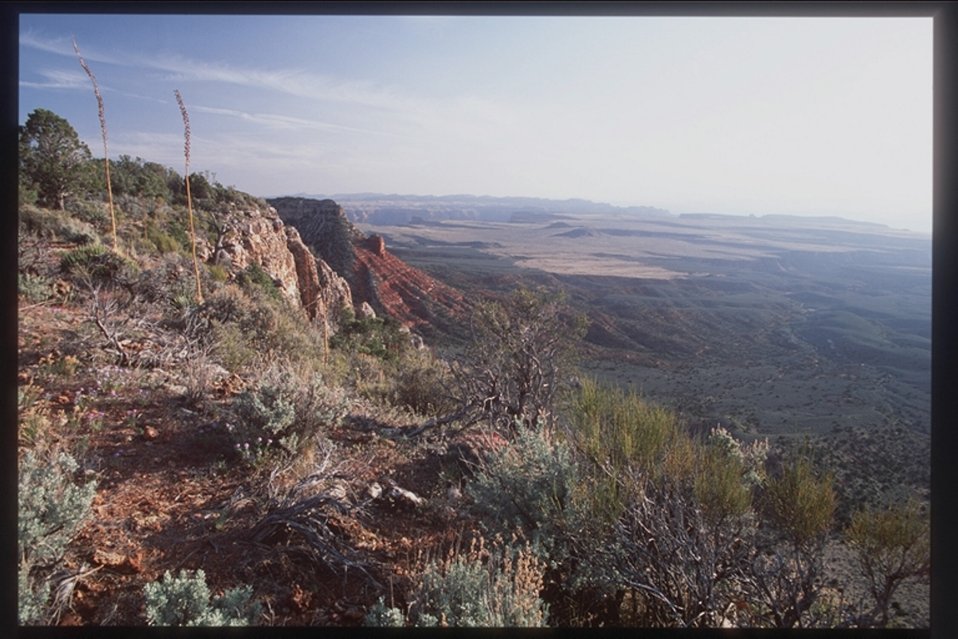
A part of the epic grandeur of the Grand Canyon-Parashant National Monument is caught in this photograph.